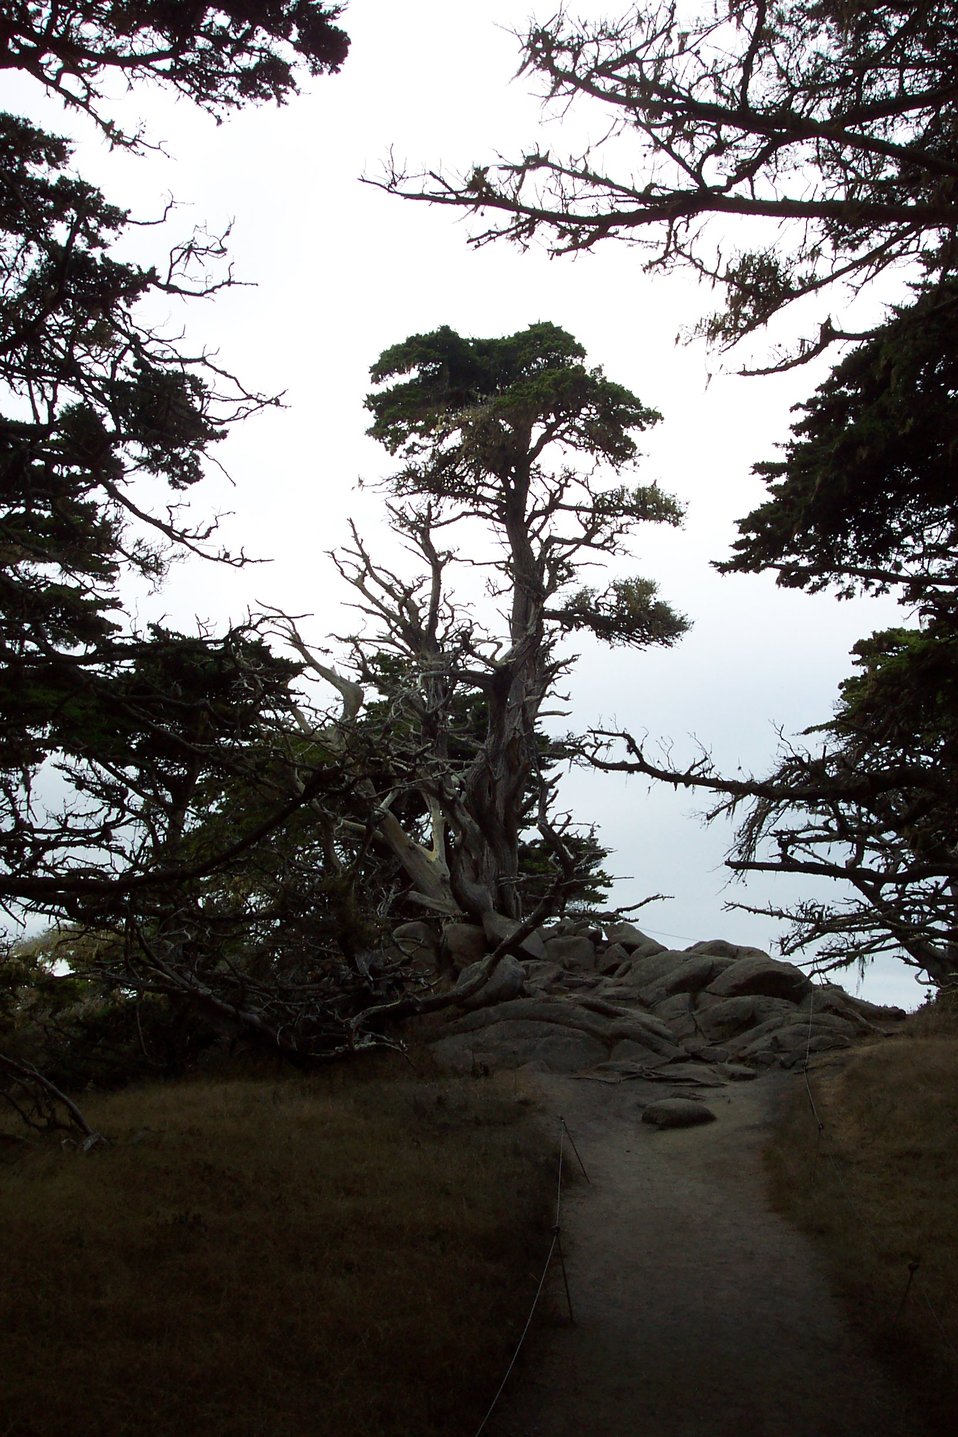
Monterey cypress on a Point Lobos Santa Lucia granodiorite outcrop.